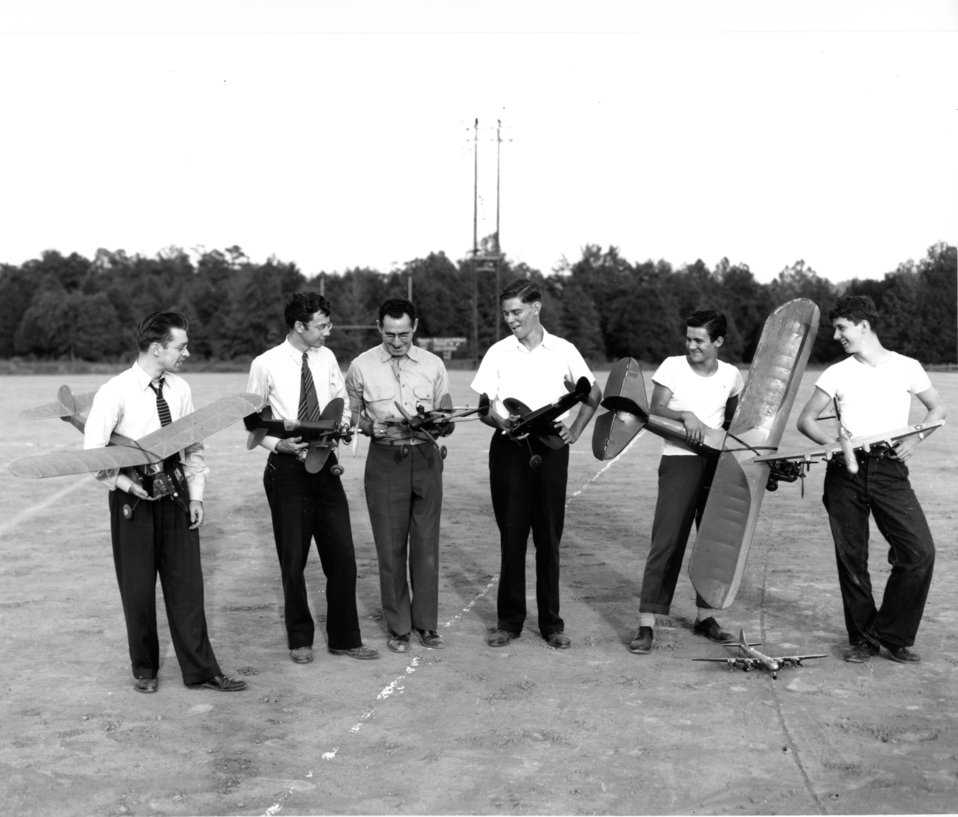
Recreation at Oak Ridge